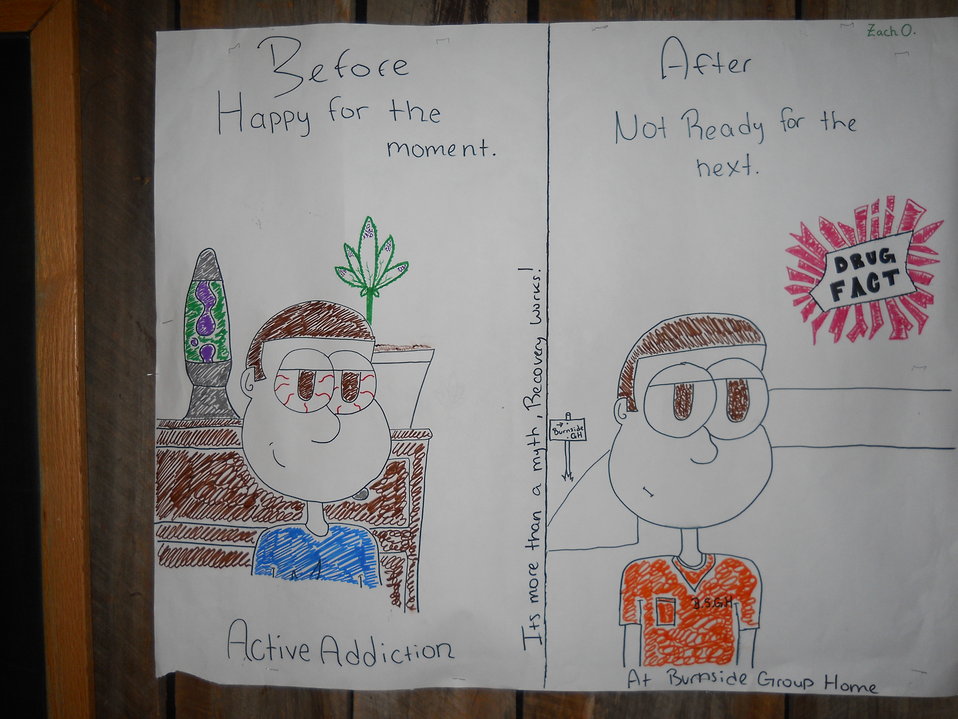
NDFW 2013 Poster

Arlington, Va. Ready Coalition NDFW 2013 Event.